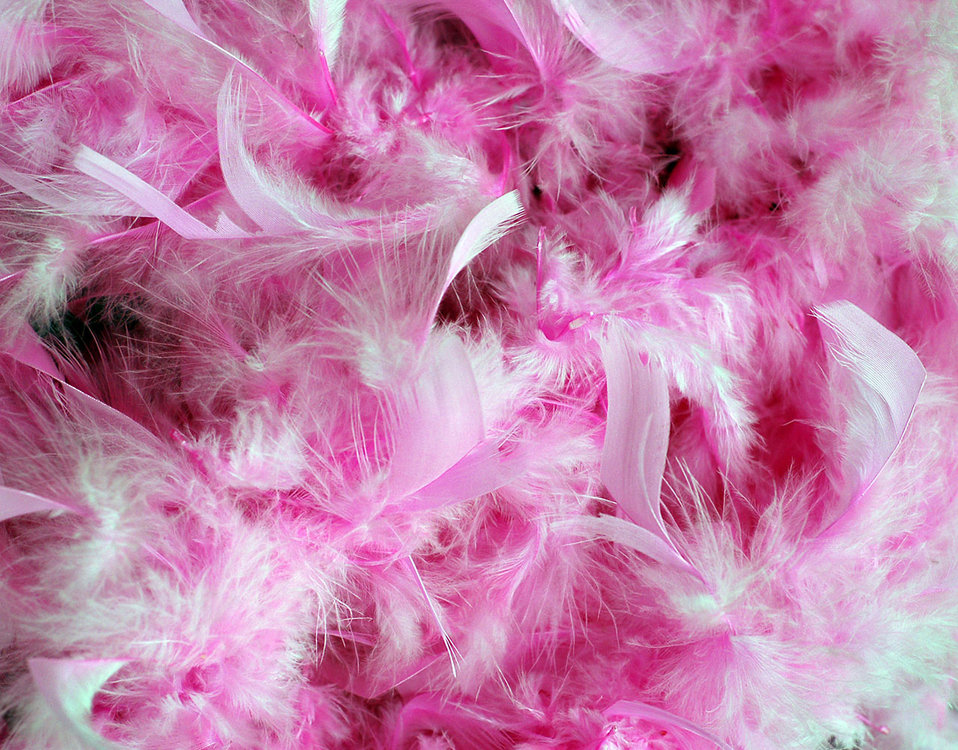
Pink feathers background

Fluffy pink feathers background.